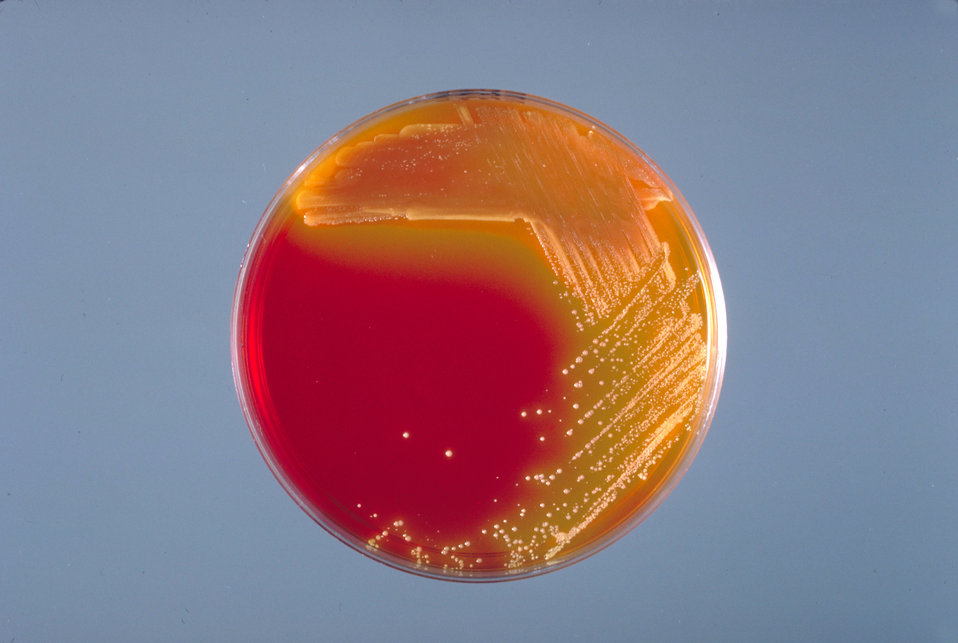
This is a XLD agar plate culture of Enterobacter sakazakii after 24 hours of growth at 36� C.